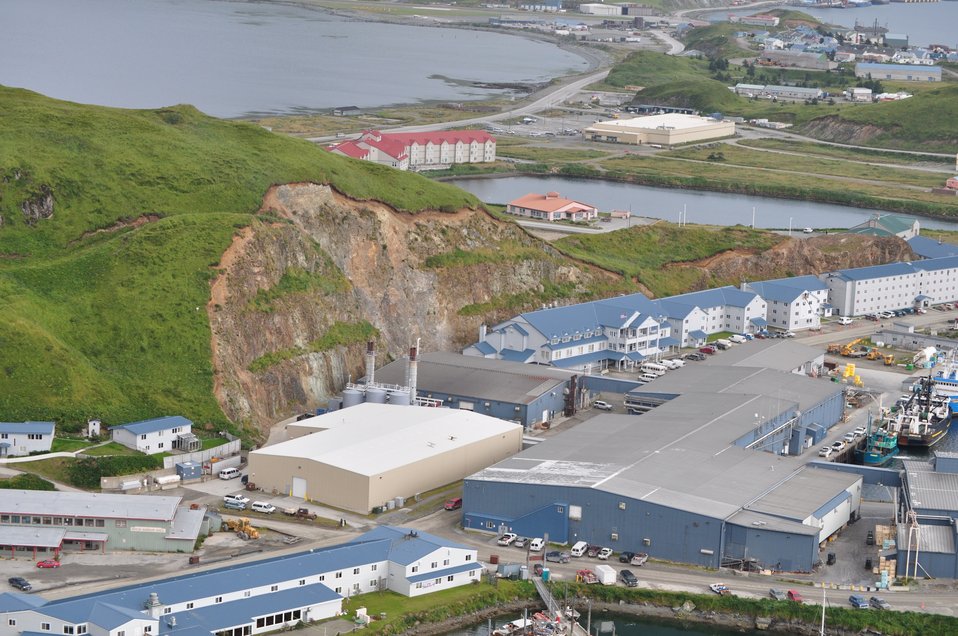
Made it down. The airport can be seen in the very top of the photo. The Grand Aleutian Hotel is the red-roofed building in the top center of the photo.